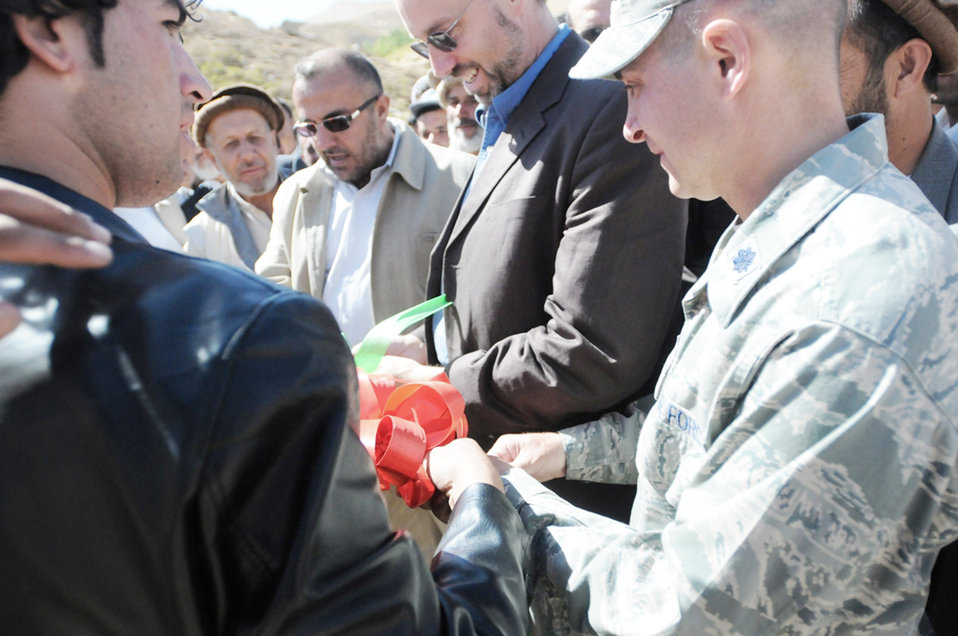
Panjshir Provincial Reconstruction Team helps Afghans

Lt. Col. Eric Hommel (right) and James DeHart (second from right) join Panjshir Governor Hajji Bahlol in a ribbon cutting ceremony officially opening Khermensan Road Oct. 8, 2009, in the Anaba district of the Panjshir Province, Afghanistan. Civilian-military integration is vital in the reconstruction efforts in the Panjshir valley. Colonel Hommel is the Panjshir Provincial Reconstruction Team commander, and Mr. DeHart is the PRT director.